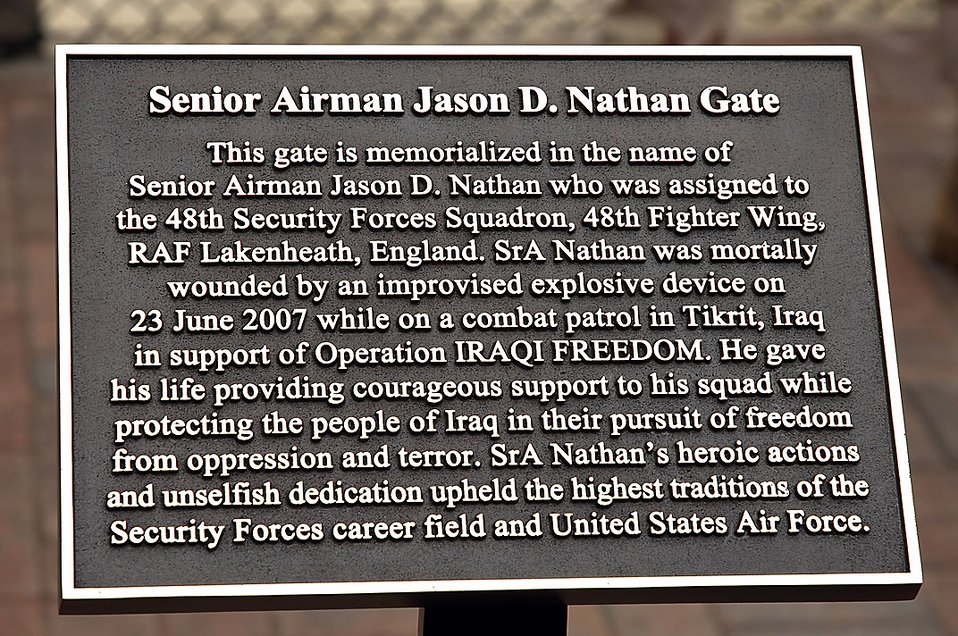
Gate dedicated to Lakenheath hero

The plaque placed at the Senior Airman Jason D. Nathan Gate stands as a reminder of the fallen hero June 1 at Royal Air Force Lakenheath, England. Airman Nathan was mortally wounded by an improvised explosive device June 23, 2007, while supporting Operation Iraqi Freedom on a combat patrol in Tikrit, Iraq.